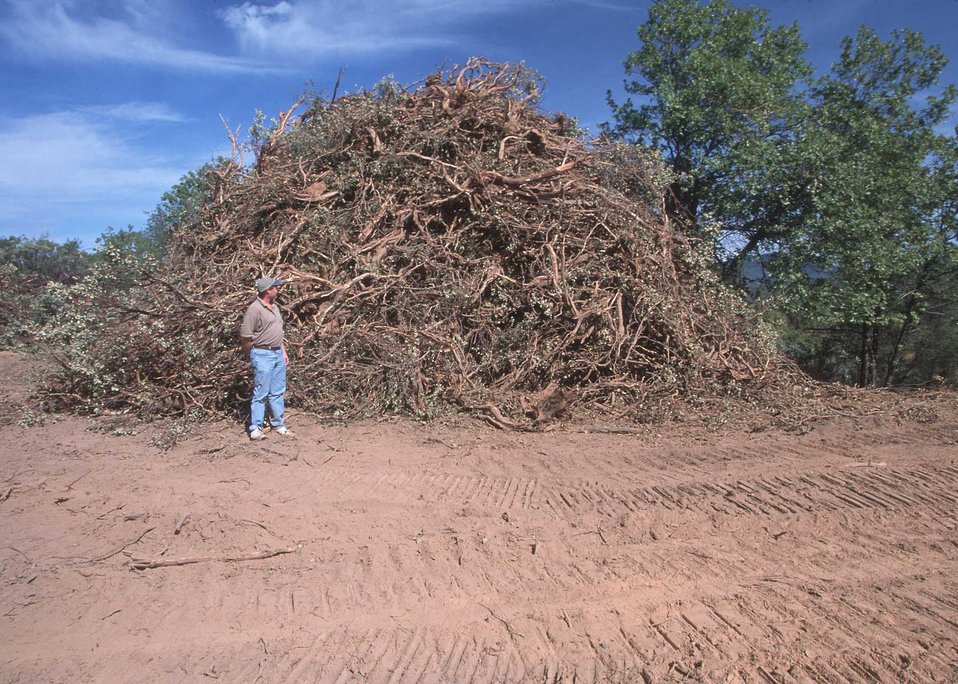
Debris from fire break/fuel reduction project will be used at a bioenergy plant in nearby Anderson.